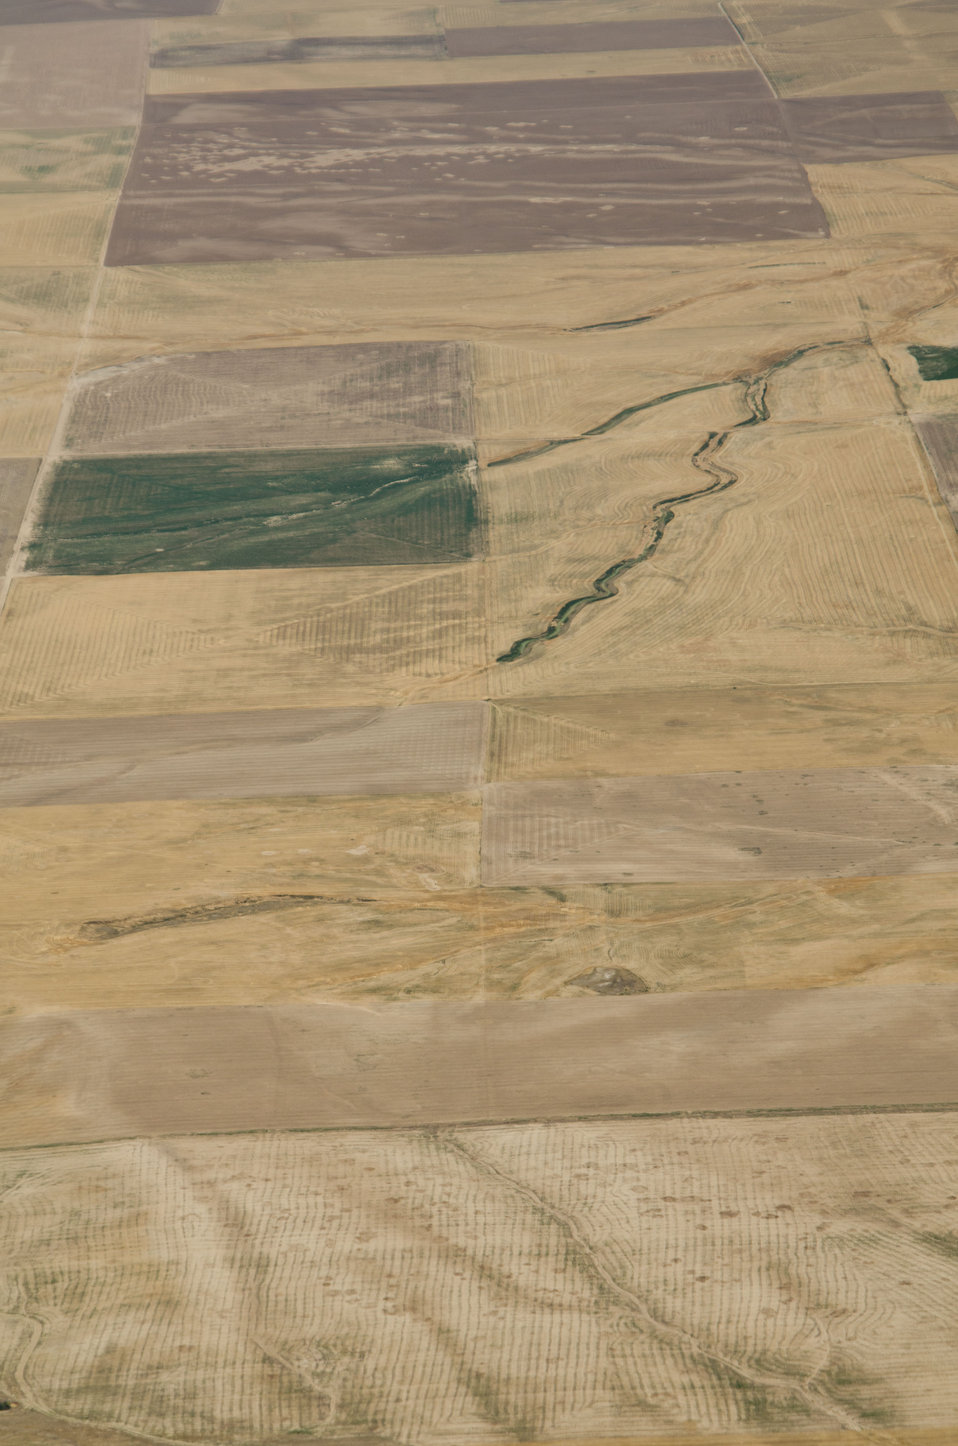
Aerial views of drought affected Colorado farm lands, 89 miles east of Denver, Colorado on Saturday, July 21, 2012. Green areas are irrigated, the yellow areas are dryland wheat crops.